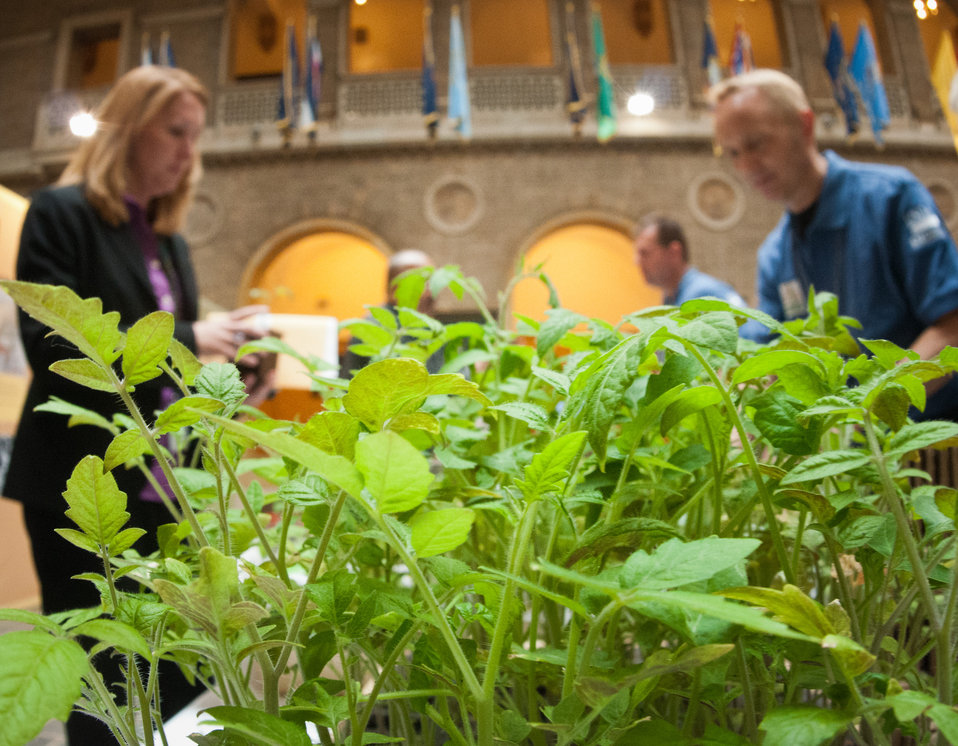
Jessica Taylor, left, makes her selection while volunteer Executive Master Gardener Richard Pacer talks about some of care and feeding of ‘Abraham Lincoln” Tomato seedlings that the People’s Garden Initiative is distributing to USDA employees in celebration of the 150th Anniversary of the U.S. Department of Agriculture, on Tuesday, May 15, 2012 in Washington, D.C., on this day, 150 years ago, President Abraham signed the Department into existence during the Civil War. In 1923 the H.W. Buckbee seed company of Rockford, Illinois introduced an heirloom variety named in honor of Illinois’ Greatest Son – Abraham Lincoln. The plant produces large beefsteak tomatoes in about 90 days. Volunteer Executive Master Gardeners planted and cultivated more that 3,000 seedlings ranging in size from one inch to more than a foot tall, so people could choose the best ones to transport home and to stagger the harvest by selecting a small and large seedling. One of the hopes of this event is to share the joys of gardening and harvesting, as well as the opportunity to share your harvest in your community. Seed packets are being distributed to People’s Gardens worldwide.